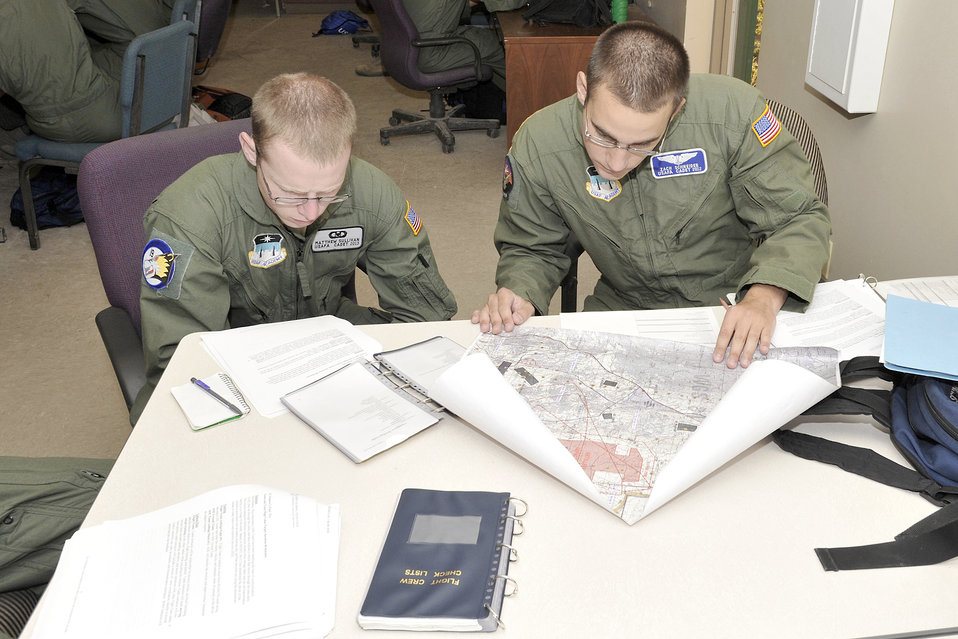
Scan Eagle

Cadet 3rd Class Matthew Sullivan (left) and Cadet 2nd Class Zach Schneider review maps and flight plans as part of the U.S. Air Force Academy's Remotely Piloted Aircraft Scan Eagle program July 6, 2010, at Fort Carson, Colo. The Scan Eagle is a remotely piloted aircraft and the cadets were learning how these systems are integrated into Air Force operations worldwide.